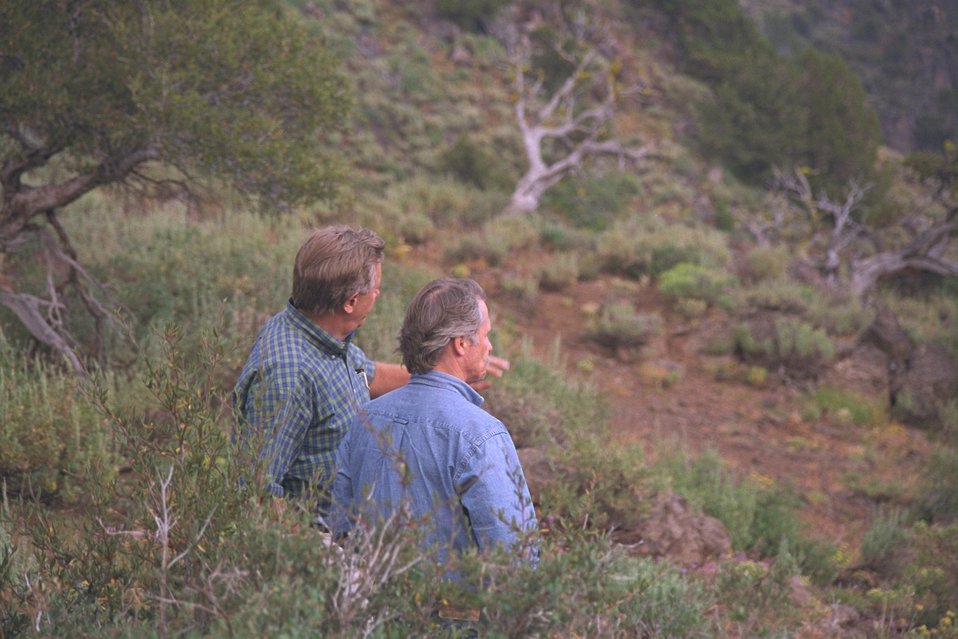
Secretary Babbitt consults with Governor Kitzhaber regarding the Steens Mountain Designation, while looking out over Big Indian Gorge.